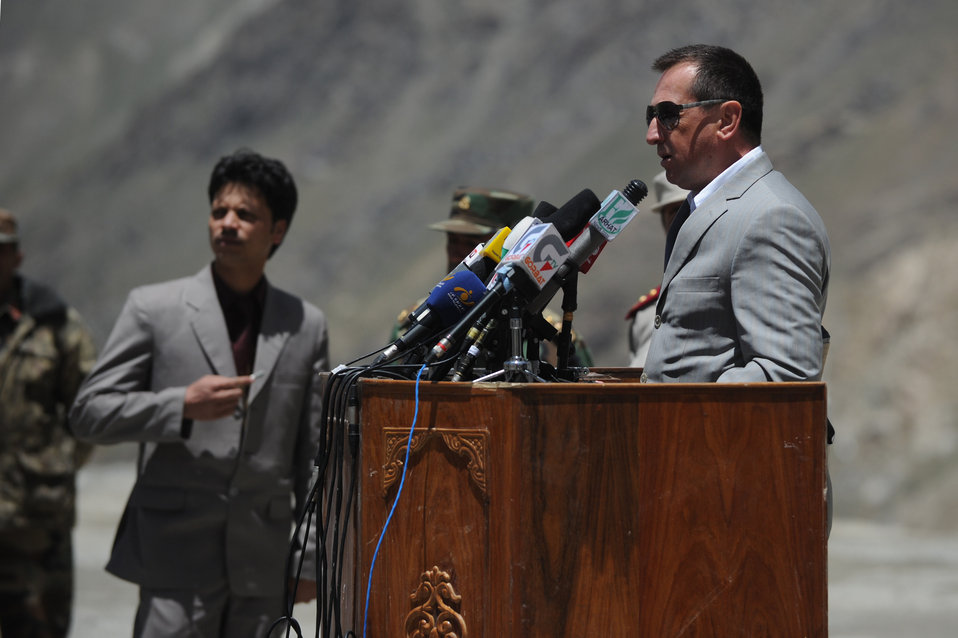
Russian Ambassador Andrey Avetisyan makes remarks during a ceremony to mark the beginning of renovations at the Salang Tunnel on the border of Parwan and Baghlan Provinces, Afghanistan, on Wednesday, June 15, 2011. (S.K.Vemmer/Department of State)